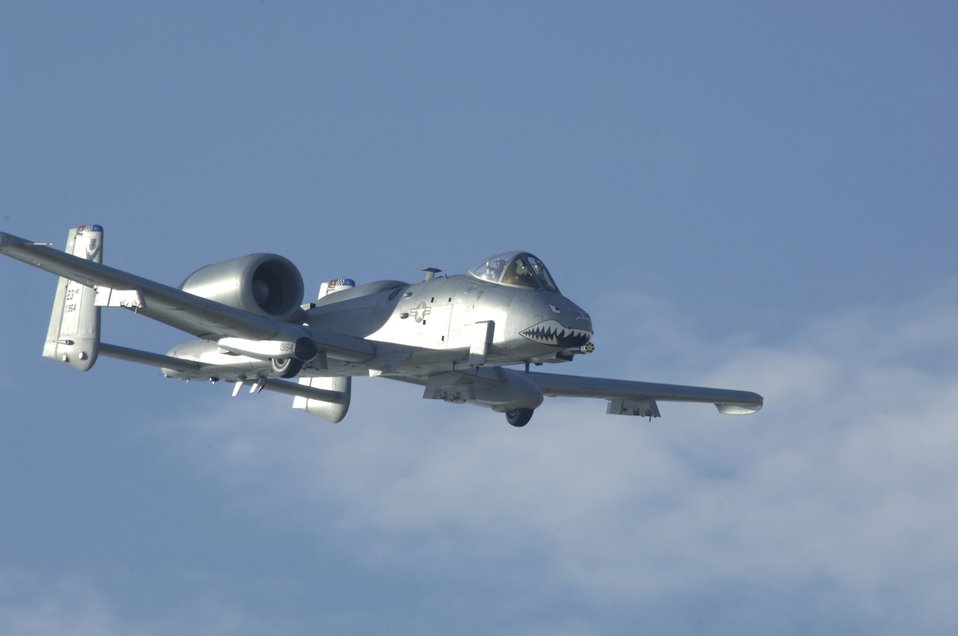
Check this out

Maj. Dylan Thorpe flies an A-10 Thunderbolt II Feb. 1, 2011, above Langley Air Force Base, Va, to demonstrate the A-10?s flying capabilities. The A-10 has low air-speed maneuverability to loiter near battlefield areas for extended periods of time. Major Thorpe is an A-10 East Demonstration Team flying officer.